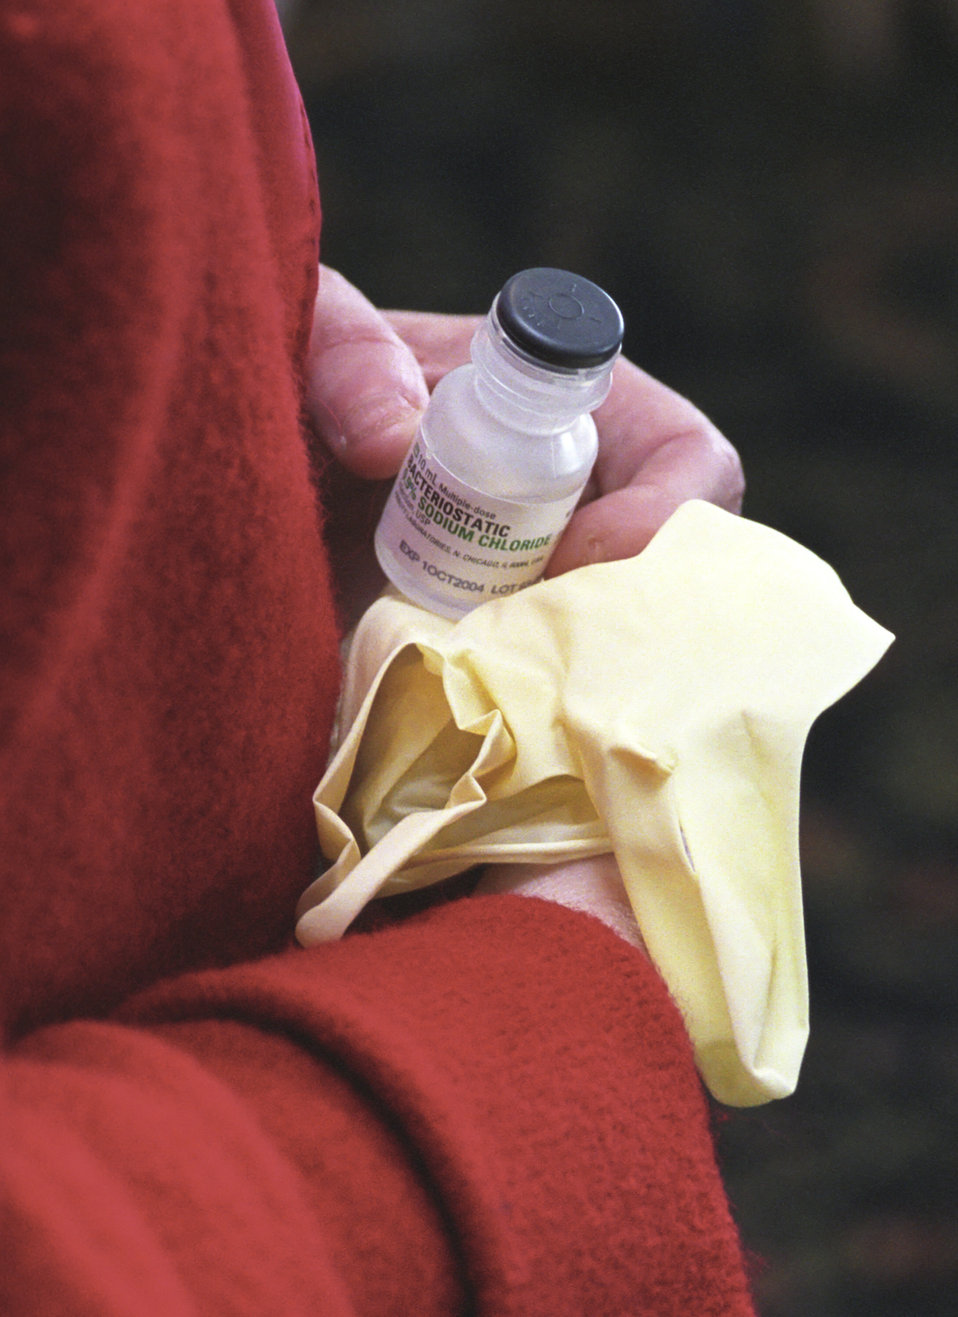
CDC Clinician shows the saline solution and gloves used during the 2002 Smallpox Vaccinator Workshop.